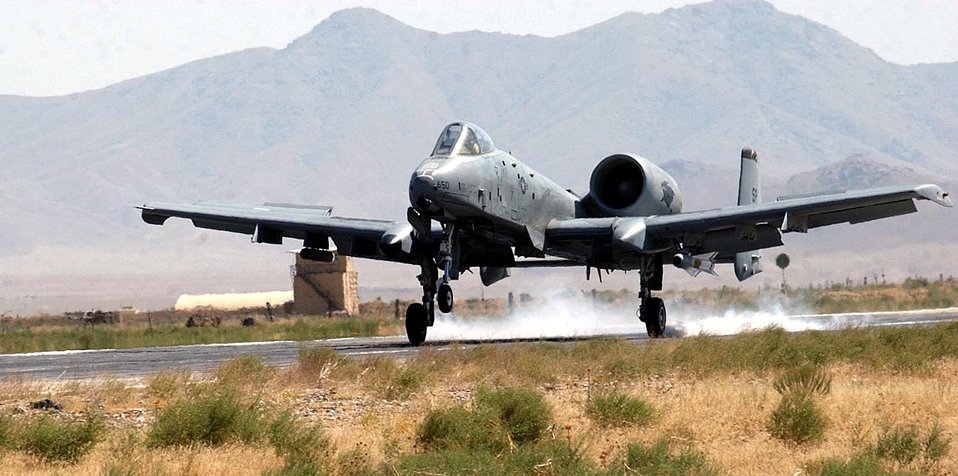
First mission

BAGRAM AIR BASE, Afghanistan -- First Lt. Erik Axt, 81st Expeditionary Fighter Squadron, touches down in his A-10 Thunderbolt II after flying a mission here Aug. 14 supporting Operation Enduring Freedom.